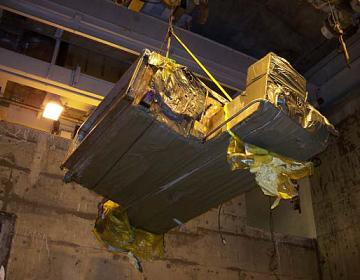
Recovery Act accelerated cleanup

Members of SRS’s legacy transuranic waste repackaging team faced challenges preparing a T-shaped glove box with a large section in the center and portions that resemble wings for repackaging and shipment to the Waste Isolation Pilot Plant in New Mexico for safe, permanent disposal.